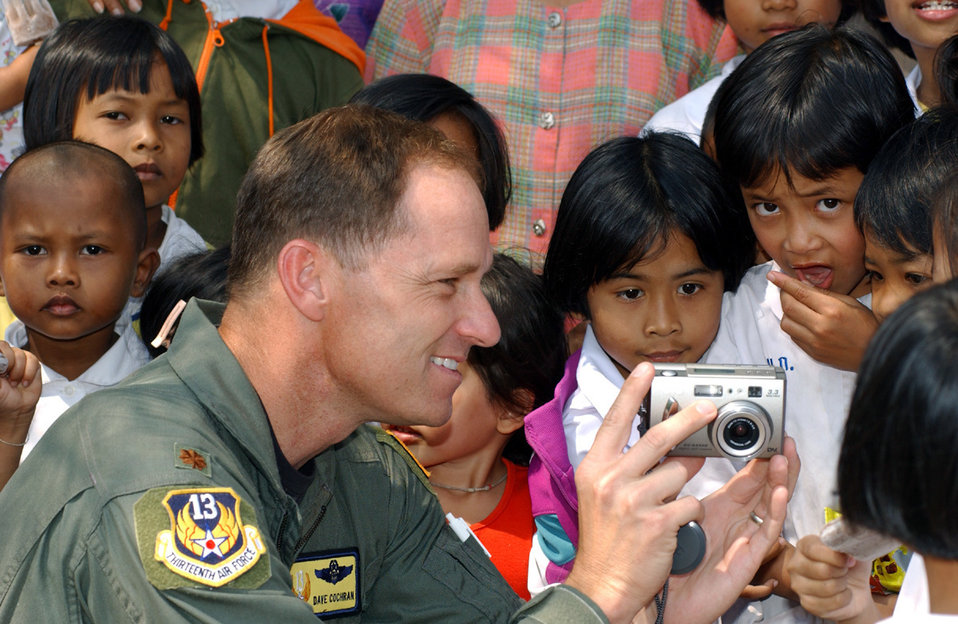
Check it out

KORAT, Thailand -- Maj. Dave Cochran shows a digital camera to a group of curious school children Feb. 16 during a visit to a local Thai school. Participants from exercise Cope Tiger '04 delivered much-needed supplies to the school. Major Cochran is deployed here from Andersen Air Force Base, Guam.